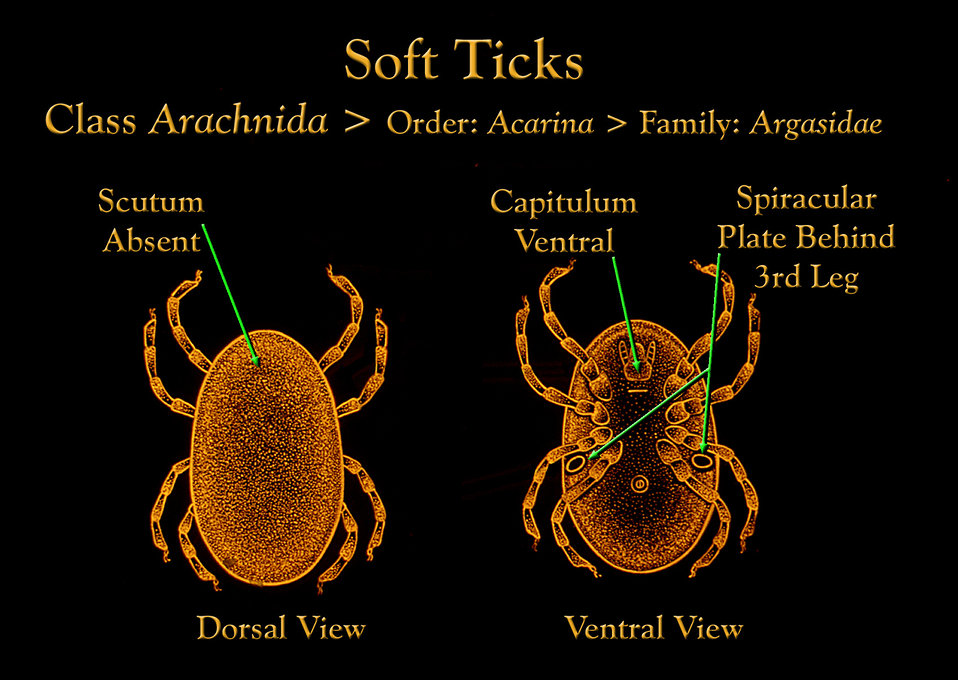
This drawing depicts an Agasidae hard tick from the dorsal and ventral perspectives revealing its morphologic features.